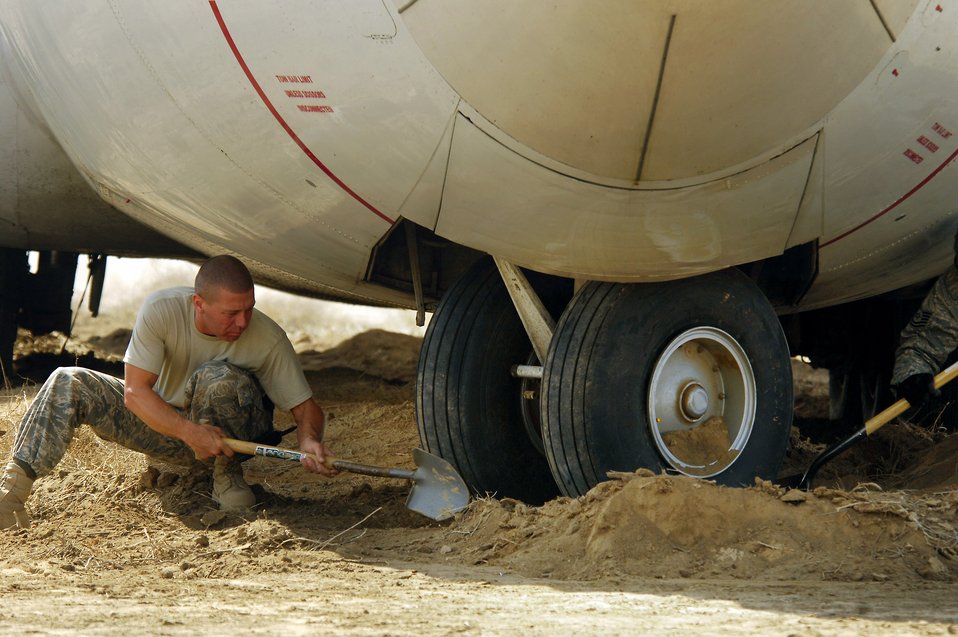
Getting the aircraft out

An Airman from the 447th Expeditionary Civil Engineer Squadron digs out the front wheels of an L-100 aircraft that rolled past the end of the Baghdad International Airport runway on April 1. Airmen from Sather Air Base unloaded cargo and fuel before towing the aircraft back to pavement.